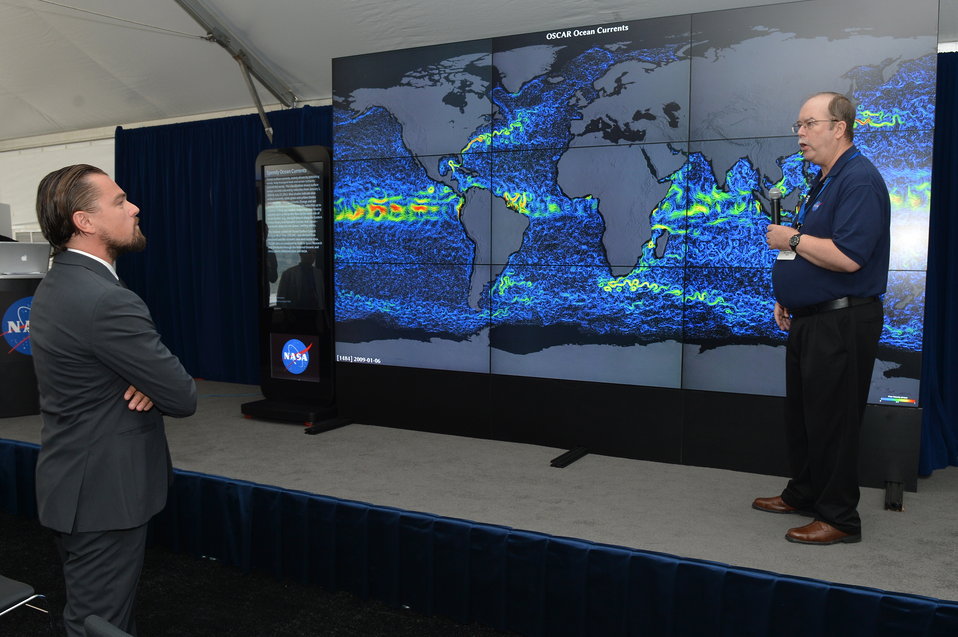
Leonardo DiCaprio attends an exhibit at the 'Our Ocean' Conference at the U.S. Department of State in Washington, D.C. on June 17, 2014.